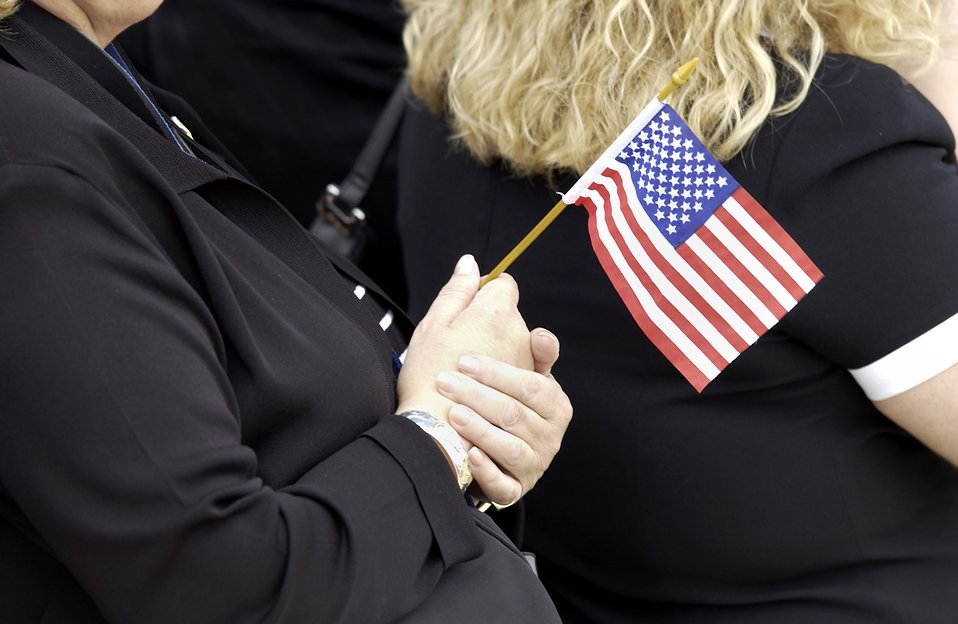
Celebrating Flag Day

ANDREWS AIR FORCE BASE, Md. -- Americans are reminded of those who have died for the freedom the American flag represents as they celebrate Flag Day on June 14.